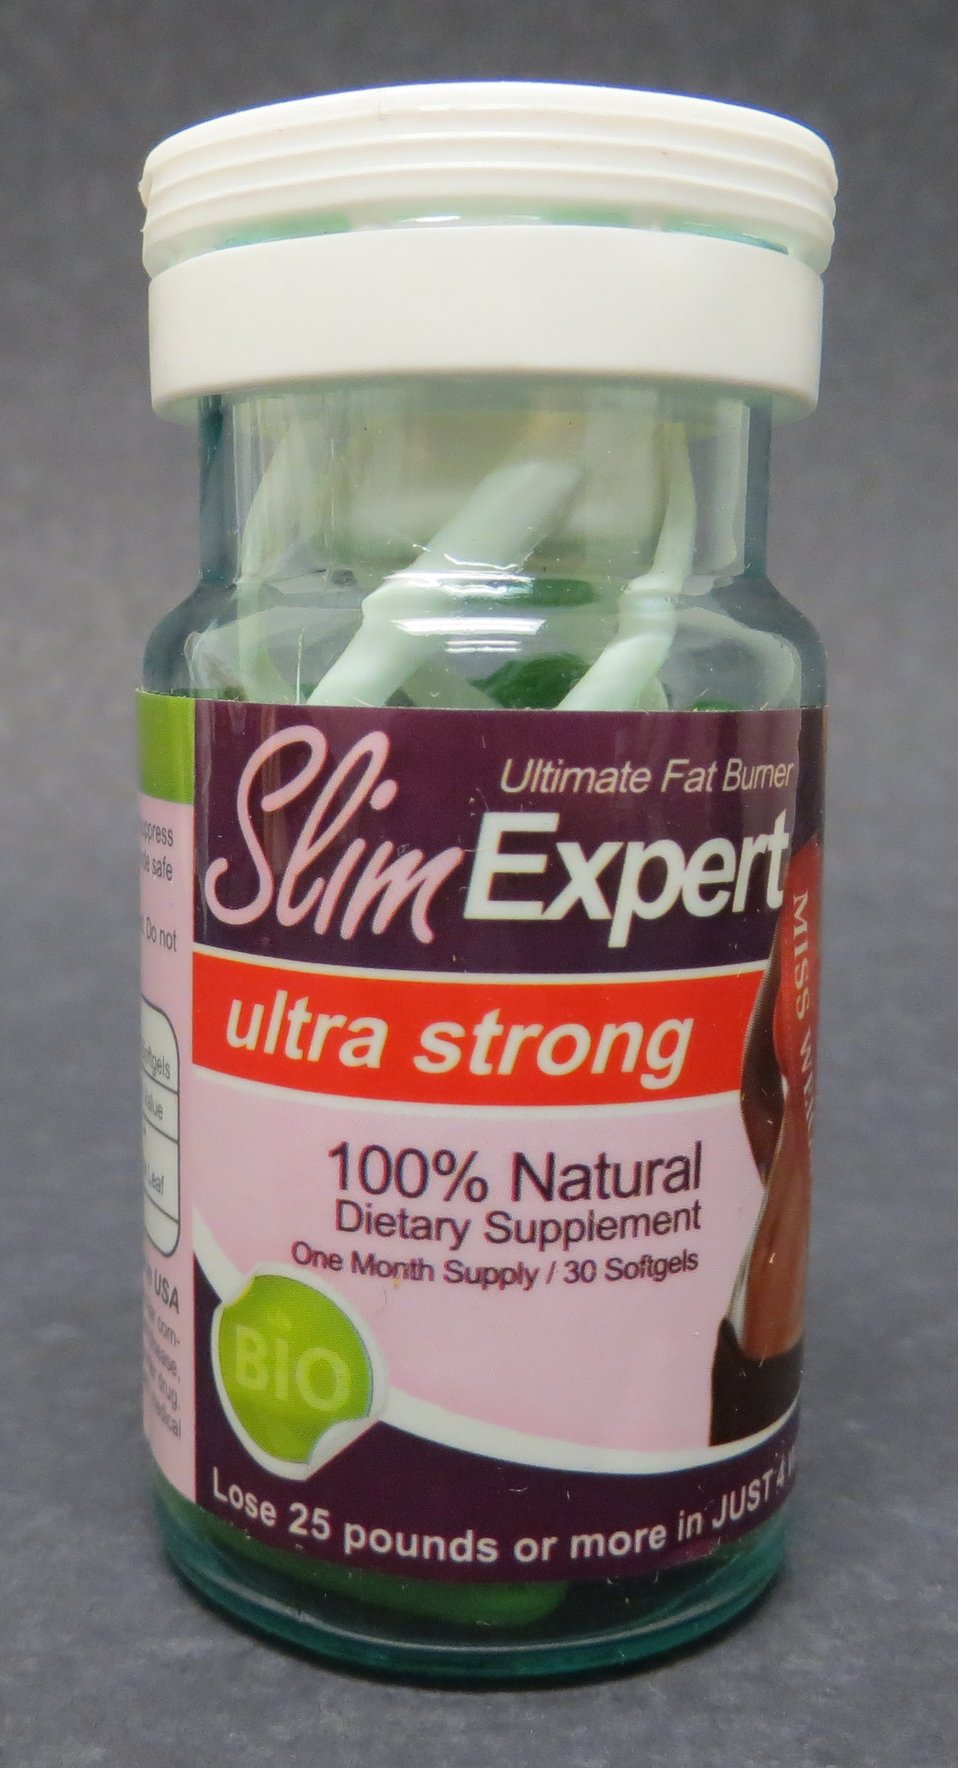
Slim Expert

October 7, 2013 - The FDA is advising consumers not to purchase or use 'Slim Expert,' a product promoted and sold for weight loss. The product was found to contain undeclared sibutramine. For more information, go to www.fda.gov/Safety/Recalls/ucm370884.htm

And read this Consumer Update: Beware of Fraudulent ‘Dietary Supplements’